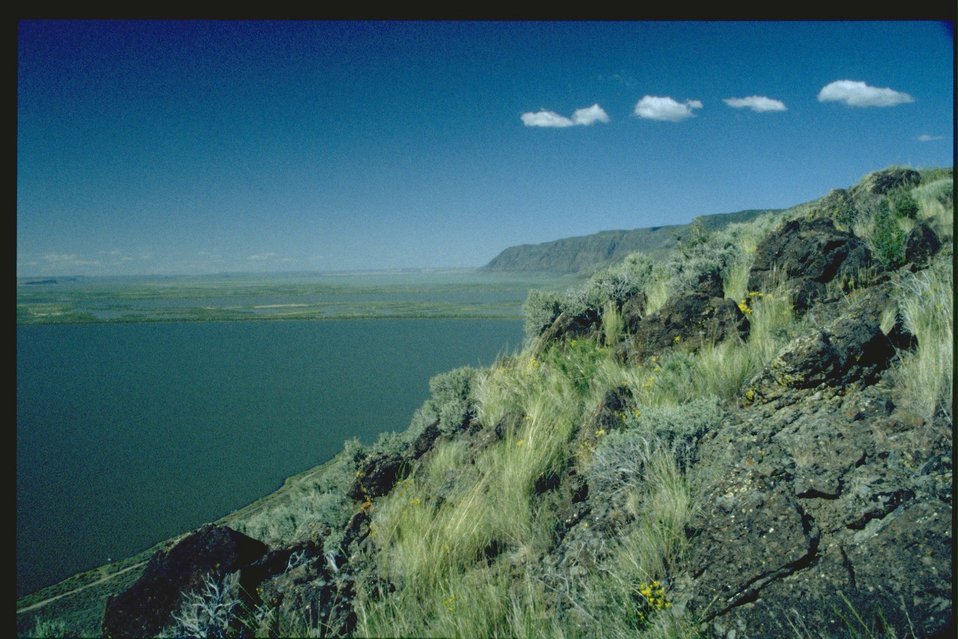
Warner Wetlands.